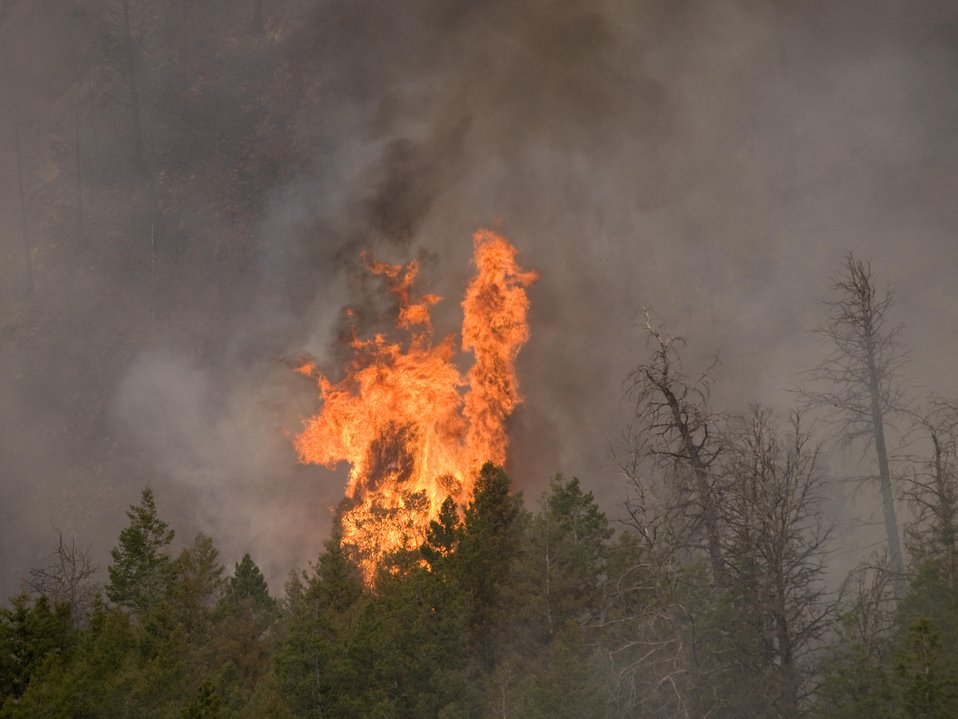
The Lodgepole Fire in the Salmon-Challis National Forest near Challis, ID began on Jul. 20, 2013 by lightning has consumed approximately 13,700 acres and is approximately 15% contained.